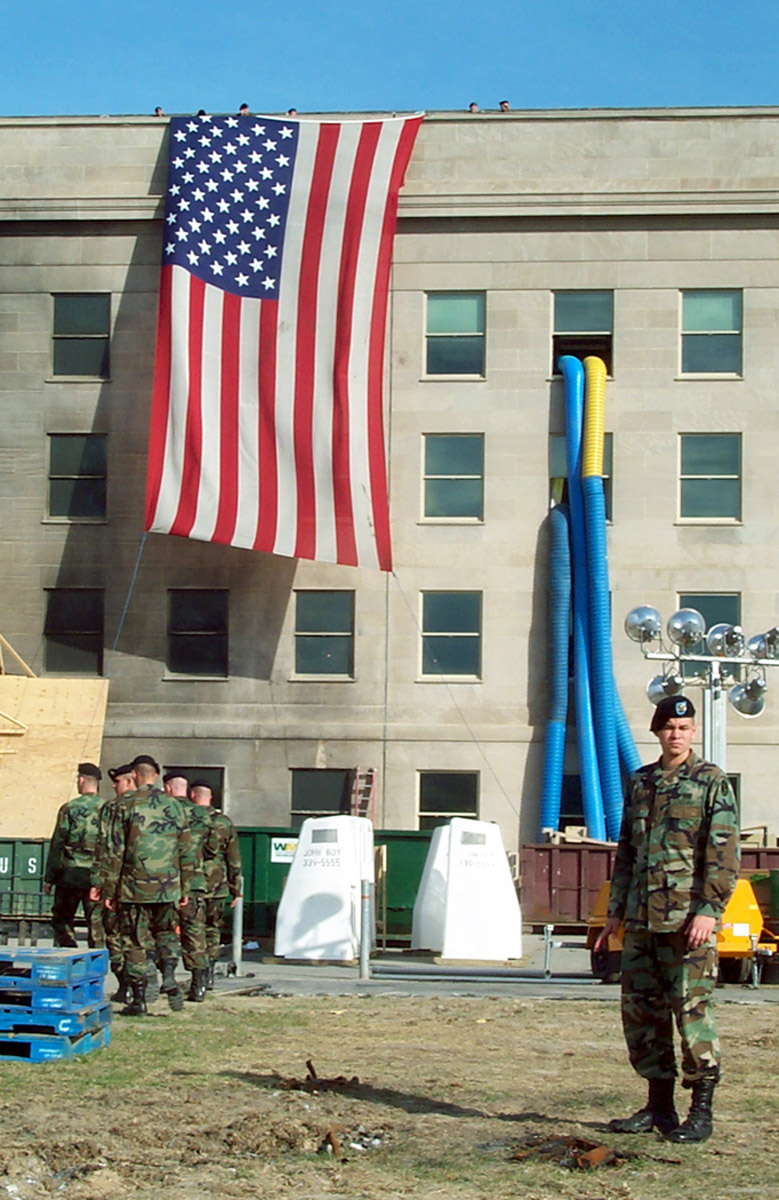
Flag of Honor

WASHINGTON -- Soldiers prepare to lower the garrison flag that draped the side of the Pentagon beside the impact site where terrorists crashed a hijacked airliner Sept. 11, 2001. The soldiers lowered and folded the flag Oct. 11, 2001.